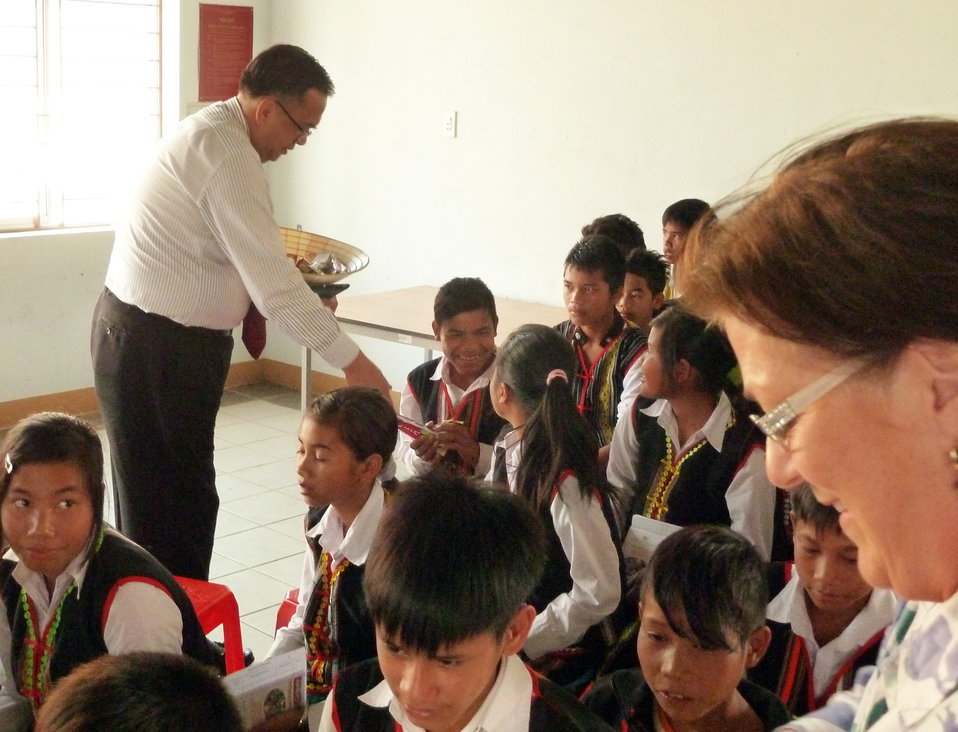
U.S. Deputy Chief of Mission Claire Pierangelo and Consul General Le Thanh Andistributes toothbrushes and toothpaste at a dental screening at Kon Ray school